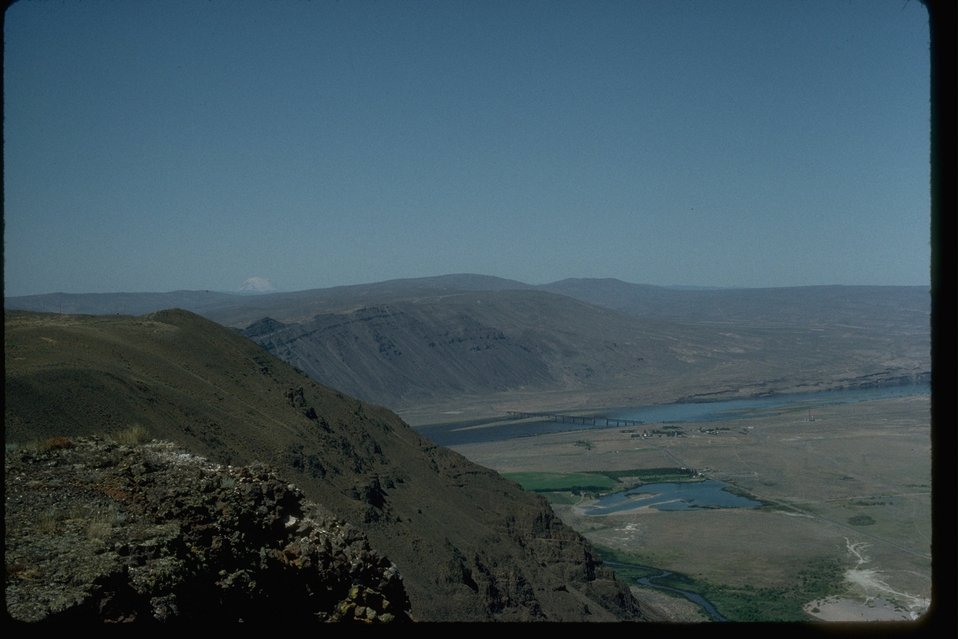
View from atop Saddle Mountains in Grant County, WA, MT. Rainier in background.